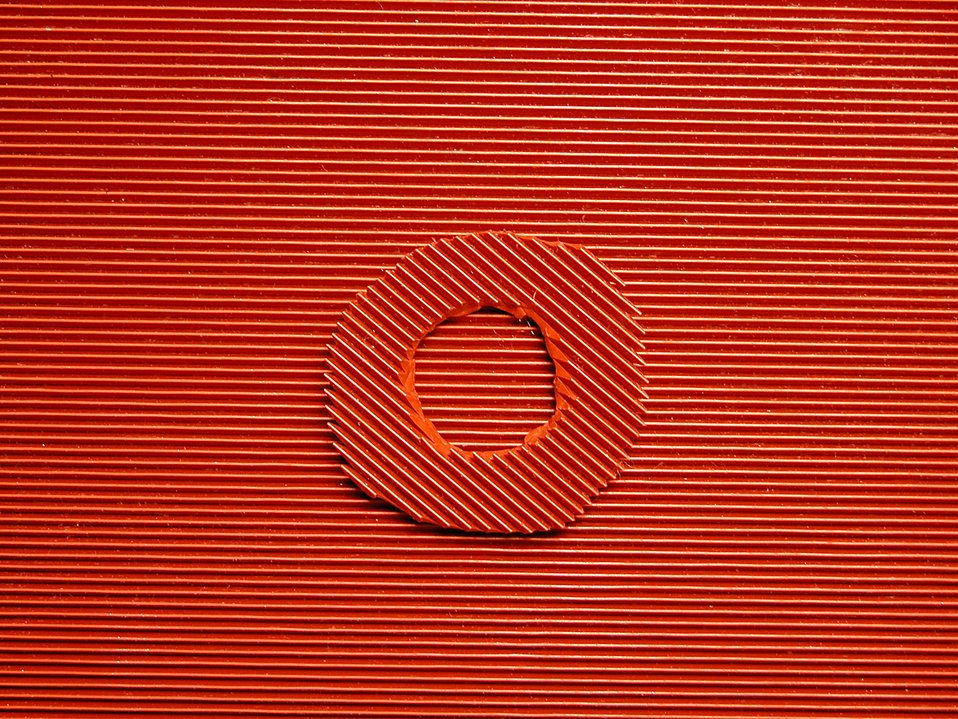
Ring Absorber

See www.nist.gov/pml/electromagnetics/terahertz 041508.cfm for more details.